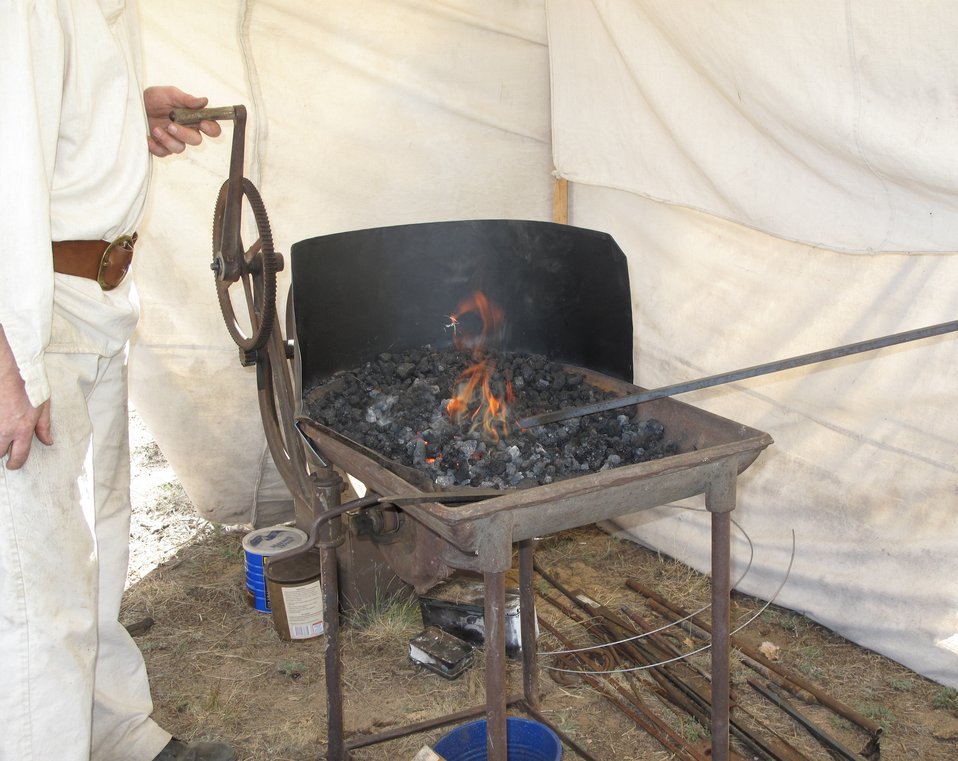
Refuge Round-Up 2010